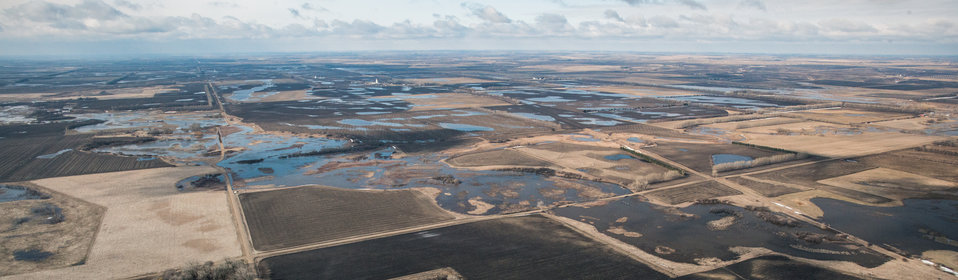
Proposed Dam site #10, on Turtle River Watershed in Grand Forks County, ND, part of the Red River basin, on Wednesday, May 1, 2013. To learn about the Red River Basin Initiative, see www.mn.nrcs.usda.gov/news/features13/RRBI.html.